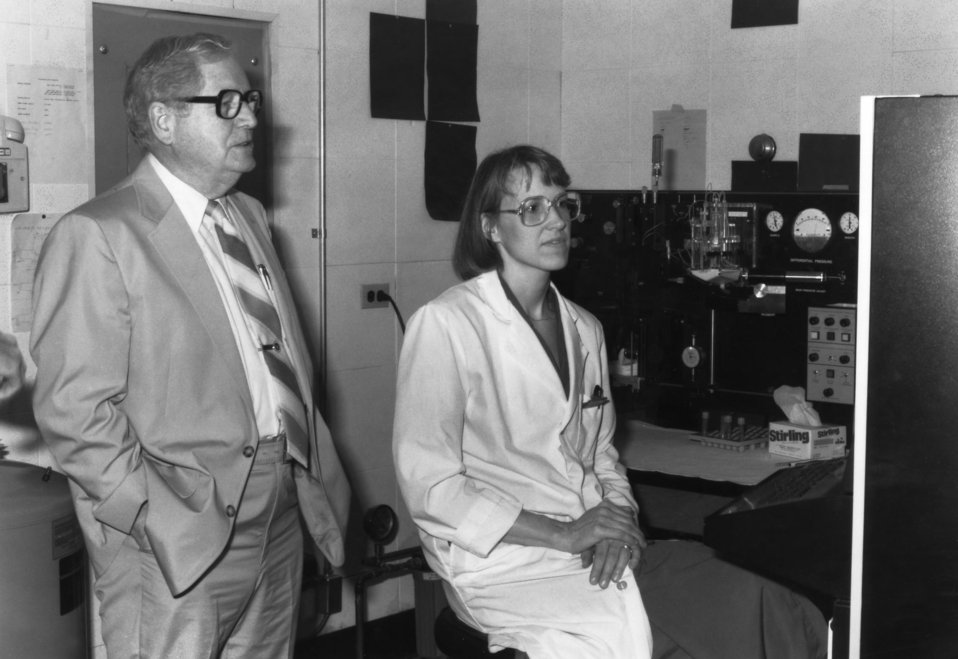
This 1986 photograph showed Dr. Otis Ray Bowen, standing next to one of the Centers for Disease Control's laboratorians, in a lab setting while visiting the CDC during the organization's 40th anniversary ceremony. At the time, Dr. Bowen was the Secretary of the U.S. Department of Health and Human Services, serving in that position from 1985 until 1989.